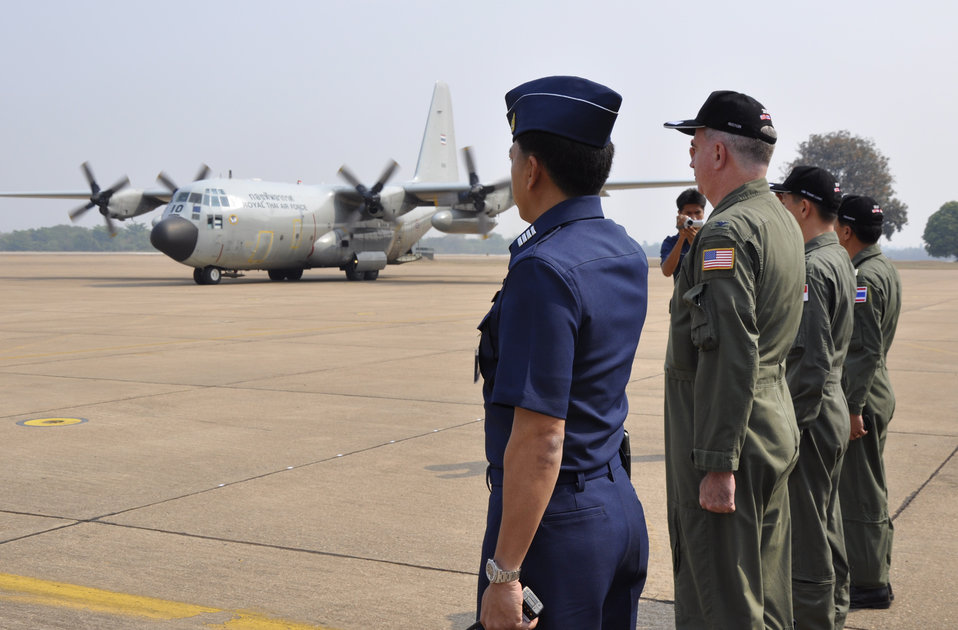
Pacific partners close Cope Tiger with ceremony

The U.S., Singaporean and Thai exercise directors for Cope Tiger 2010 render salutes as the official party arrives in a Royal Thai Air Force C-130 Hercules March 12, 2010, at Korat Royal Thai Air Force Base, Thailand.